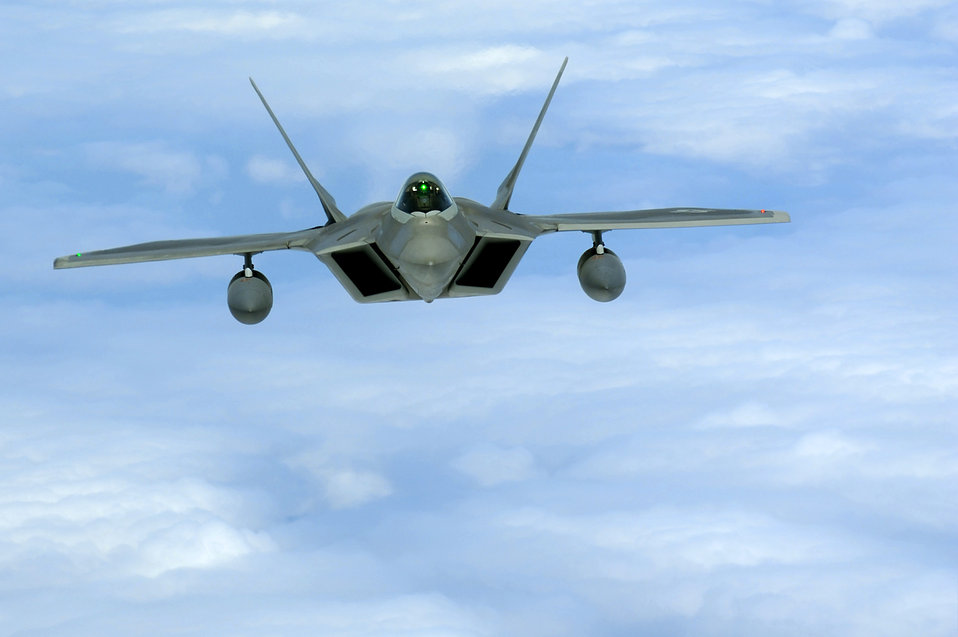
Lethal presence

An F-22 Raptor flies over the Pacific Ocean July 2, 2010, on its way to its new home at Joint Base Pearl Harbor-Hickam, Hawaii.